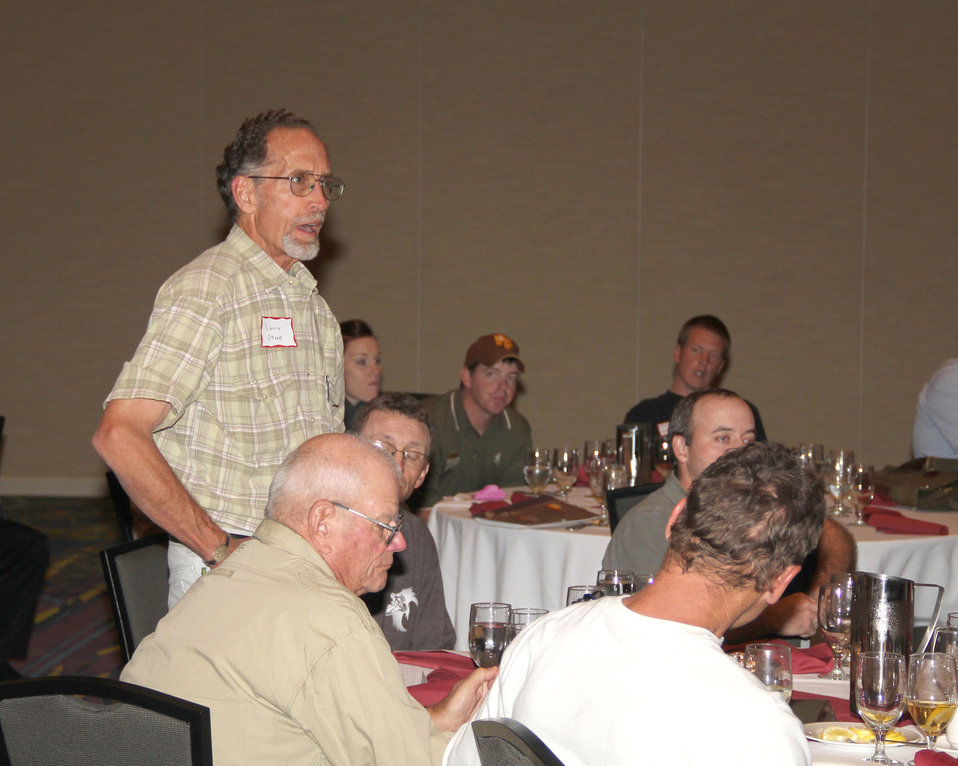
Larry Stone asks Agriculture Secretary Tom Vilsack a question about the future role conservation programs will have with the U.S. Department of Agriculture (USDA) at the rally for Iowa’s Outdoor Legacy event in Des Moines, IA on Saturday, Sept. 29, 2012. The event included several speakers and panelists who highlighted challenges and opportunities for conservation in Iowa, as well as lessons learned around the country and world. Secretary Vilsack’s comments focused on the important role conservation plays in helping build a stronger rural America through better care for the environment and improved economic opportunities.